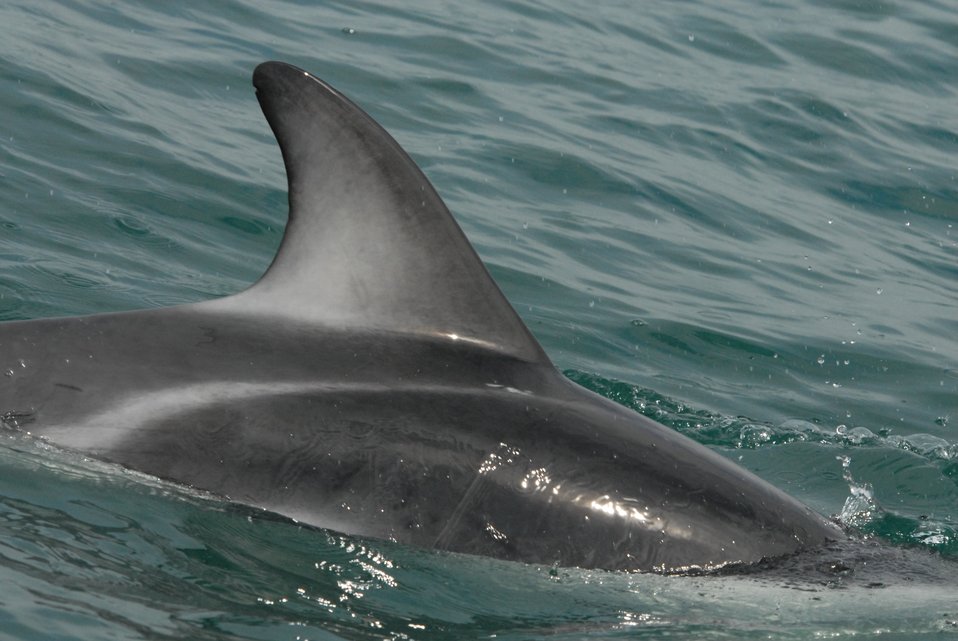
Dusky dolphin (Lagenorhynchus obscurus)